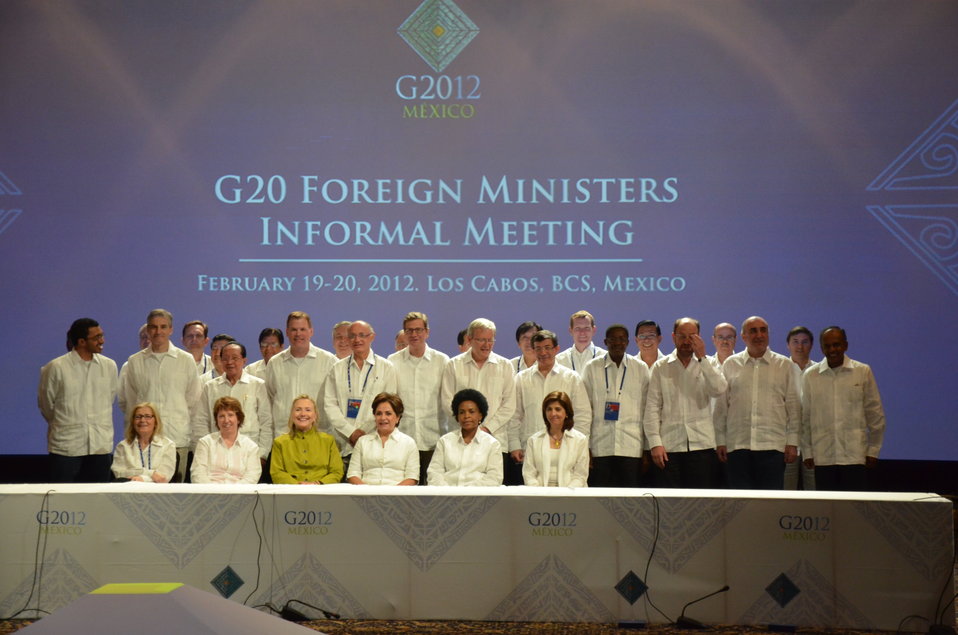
Secretary Clinton Poses for a Family Photo With G-20 Foreign Ministers

U.S. Secretary of State Hillary Rodham Clinton poses for a family photo with G-20 Ministers of Foreign Affairs in Los Cabos, Mexico, on February 20, 2012.